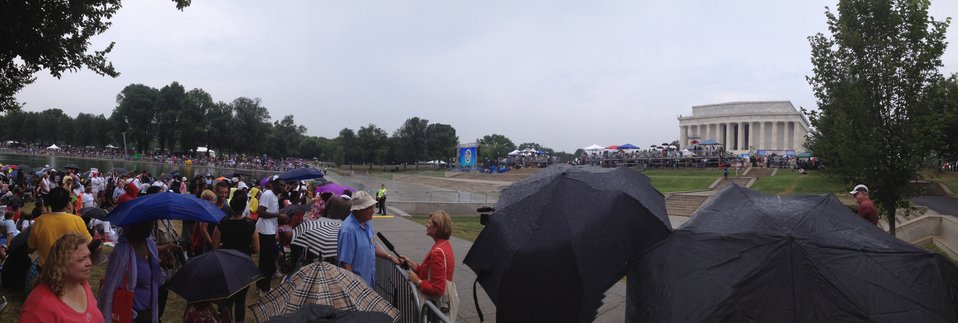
News media interview people who were here 50 years ago at the Lincoln Memorial, during the original March on Washington, D.C., on Wed., Aug. 28, 2013.